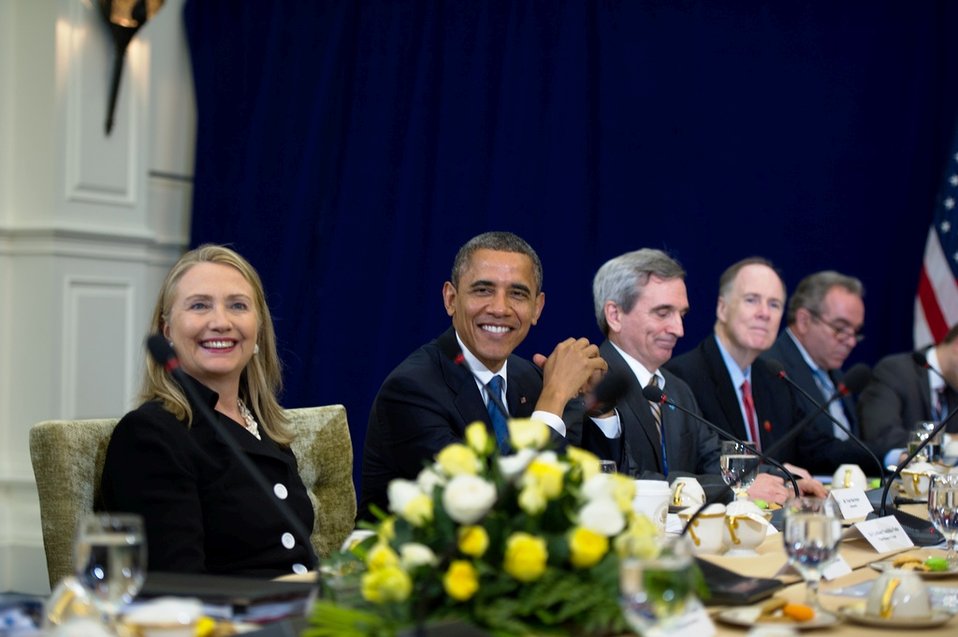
President Obama and Secretary Clinton Meet With Japanese Prime Minister Yoda

U.S. President Barack Obama and U.S. Secretary of State Hillary Rodham Clinton meet with Japanese Prime Minister Yoshihiko Noda for a bilateral meeting during the East Asia Summit at the Peace Palace in Phnom Penh, Cambodia, November 20, 2012. President Obama is the first U.S. President to visit Cambodia.